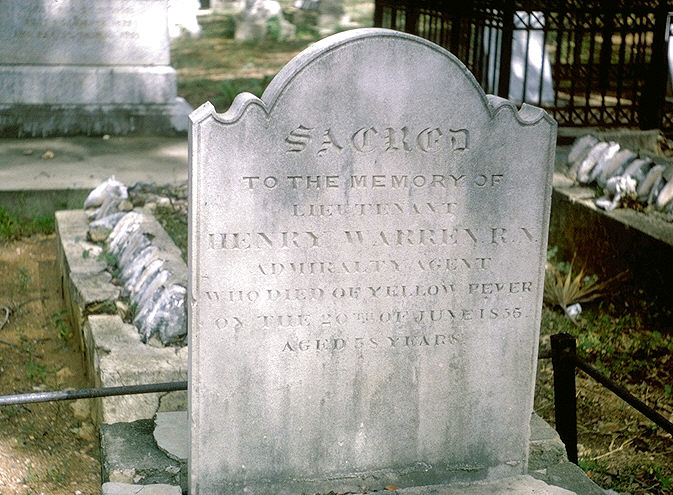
Tombstone of Henry Warren, R.N., who died of yellow fever in 1855.